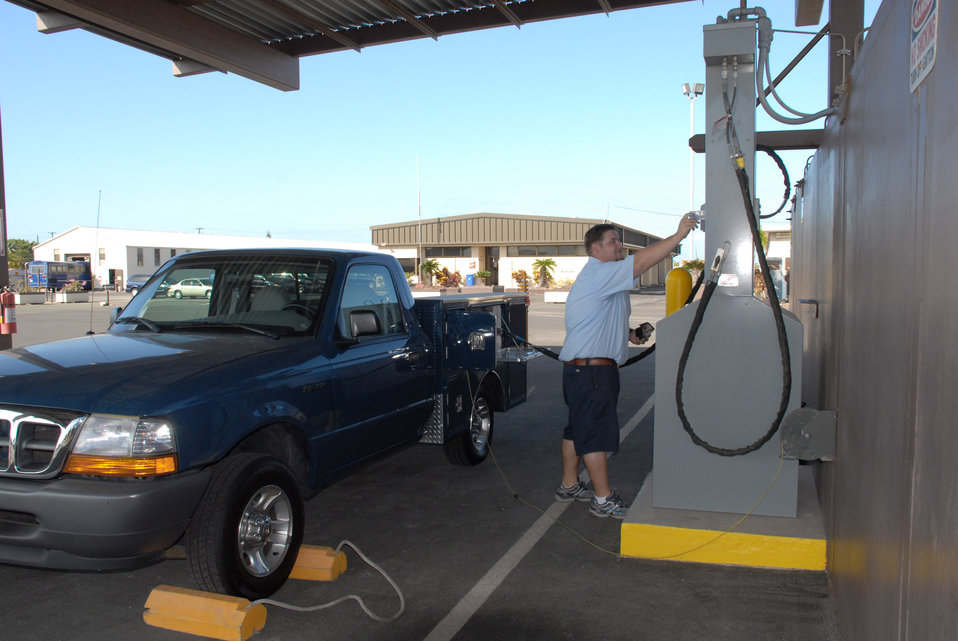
Air Force solar-powered hydrogen plant completed

Matt Morse demonstrates the use of the hydrogen station at Hickam Air Force Base, Hawaii, May 13 on a one-of-a-kind, custom-built electric flightline maintenance support vehicle. The state of Hawaii formed a partnership with the Air Force and established the National Demonstration Center for Alternative Fuel Vehicles in 2001. Early projects included both hybrid and all-electric vehicles, to include the electric shuttle bus operating at the passenger terminal. More recently, a lithium battery-powered step van was developed and demonstrated and will soon go commercial. Mr. Morse is a project engineer.